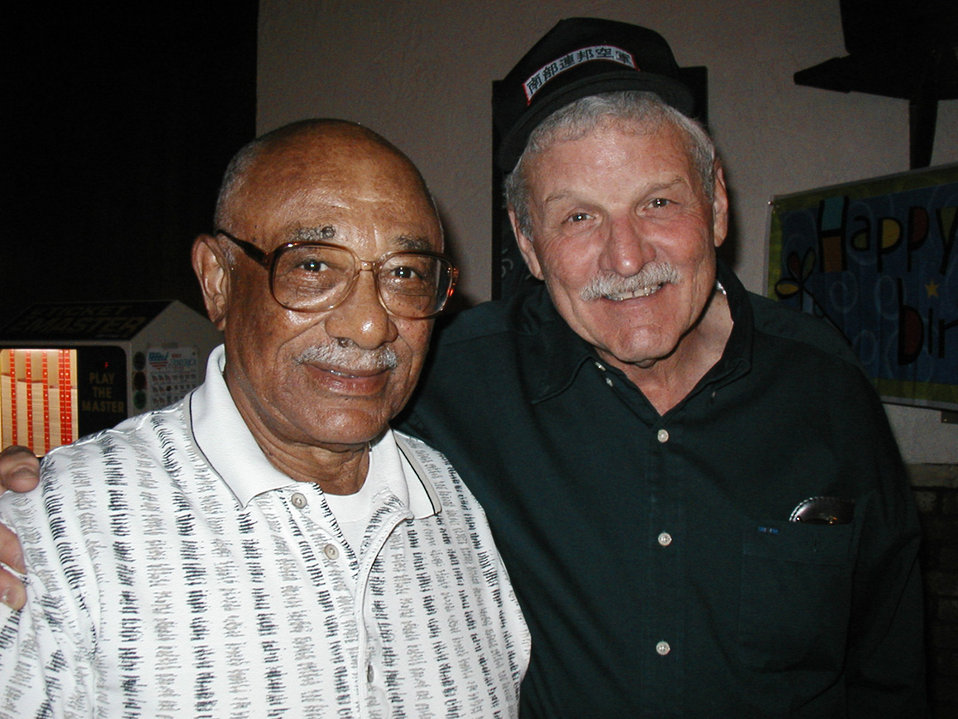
Road dedication

Retired Lt. Col. Harrison